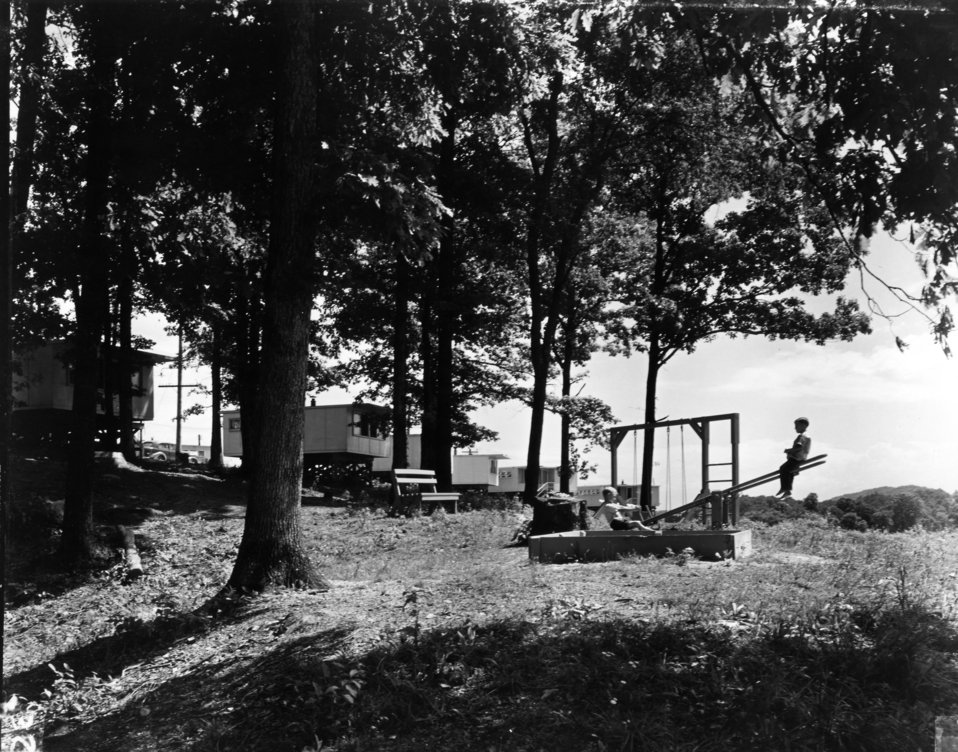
Daily Life at Oak Ridge